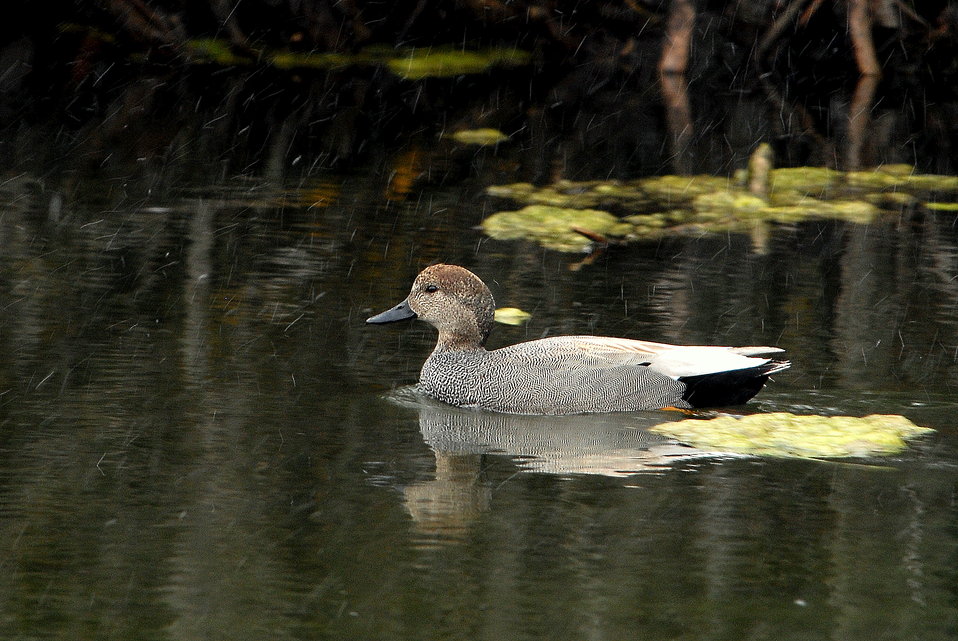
Gadwall (male)